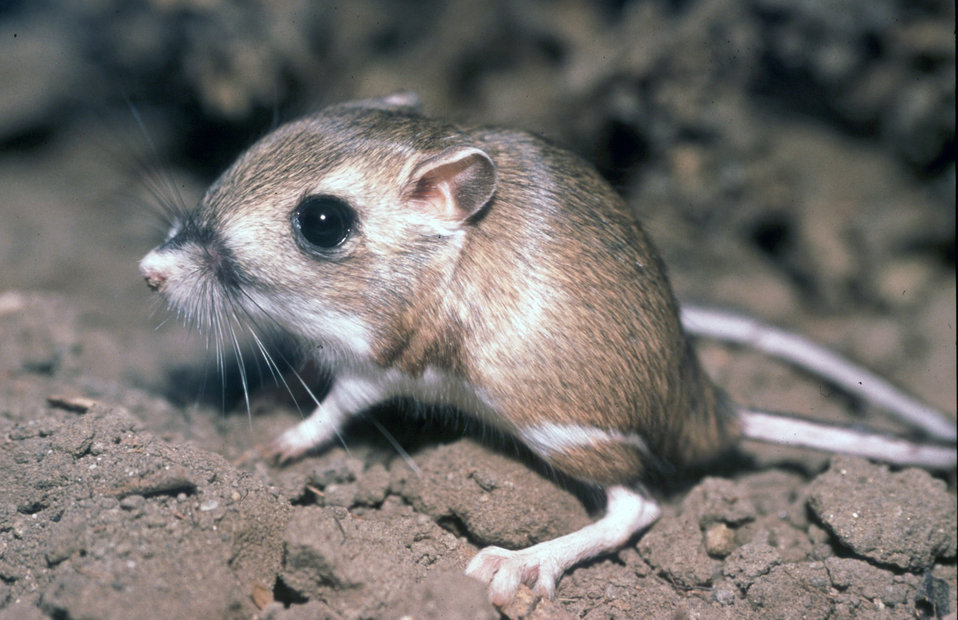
Tipton Kangaroo Rat

The endangered Tipton kangaroo rat has lost much of it's historic range with only about 4% remaining. Currently it is limited to scattered, isolated areas. In the southern San Joaquin Valley this includes the Kern National Wildlife Refuge, Delano, and other scattered areas within Kern County. (USFWS)